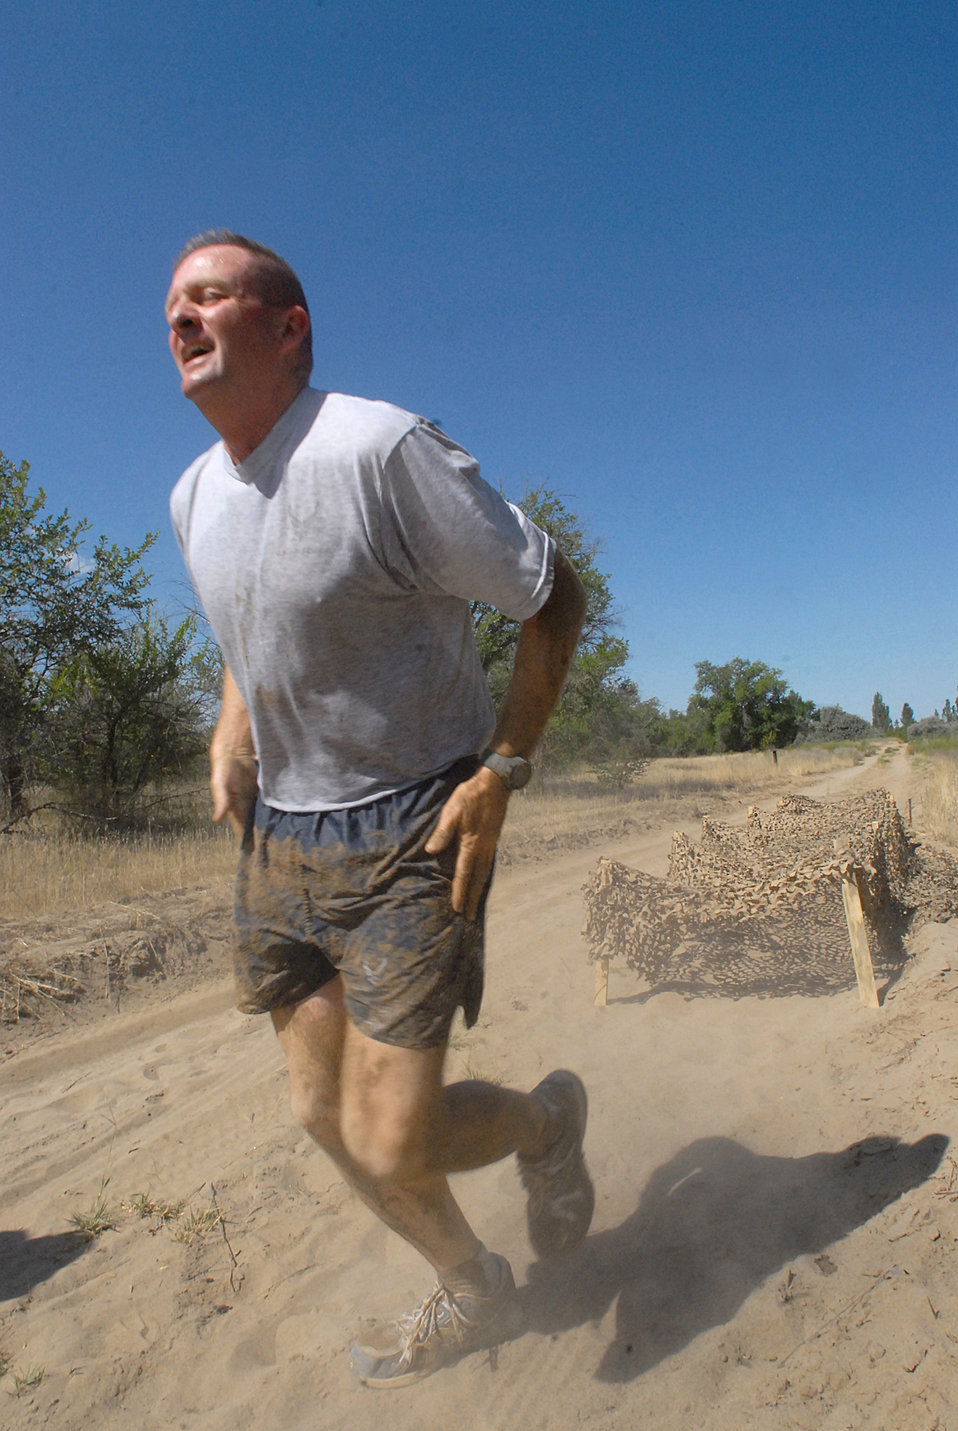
Kyrgystan 5K Mud Run

Command Chief Master Sgt. James Dowell finishes the low crawl obstacle following the slip 'n slide during the 5K mud run at the Transit Center at Manas, Kyrgyzstan, July 11, 2010. Individuals also faced a push up station, a tire run and the mud pit for the event that raised $250 for charity.